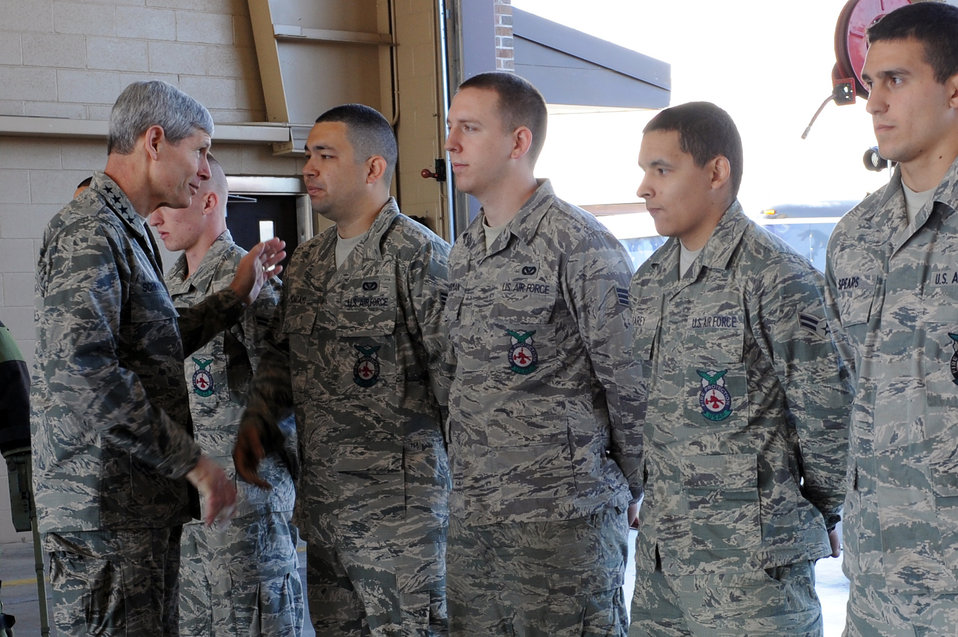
CSAF addresses AF issues, surveys tornado damage at Little Rock AFB

Air Force Chief of Staff Gen. Norton Schwartz meets with 19th Civil Engineer Squadron fire fighters May 4, 2011, at Little Rock Air Force Base, Ark. General Schwartz was previously assigned to Little Rock AFB during his C-130 Hercules initial-qualification training and as a C-130E/H flight examiner.